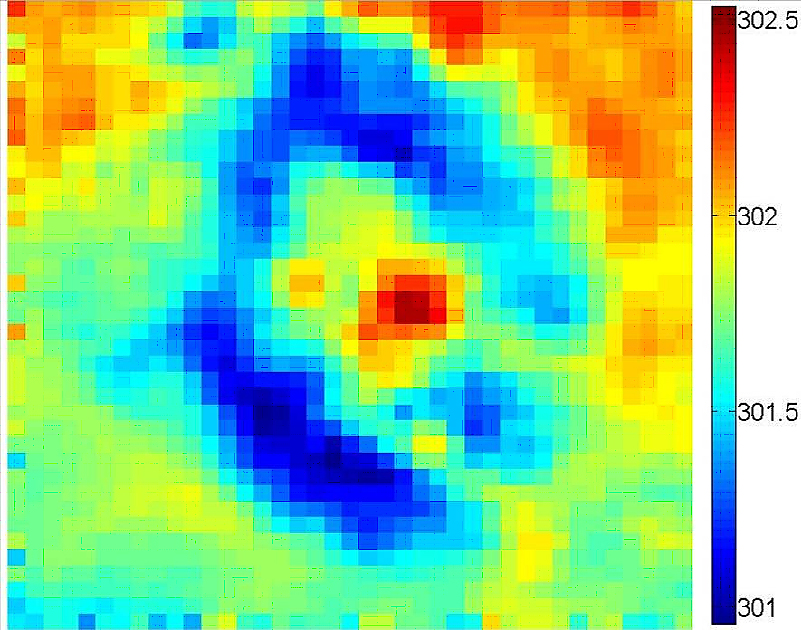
Prototype Terahertz Imager Promises Biochem Advances

The NIST terahertz imaging system reveals slight temperature differences, as shown in this post-processed image. The color scale ranges from blue indicating 301 K or 28.75 degrees C, to red indicating 302.5 K or 29.35 degrees C. Quantitative analysis shows the current system can distinguish structures with dimensions as small as 4 millimeters, to be significantly improved in the future.